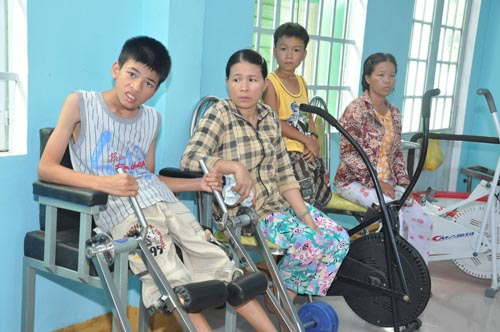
USAID-supported Hao Vang District Health Center, Danang